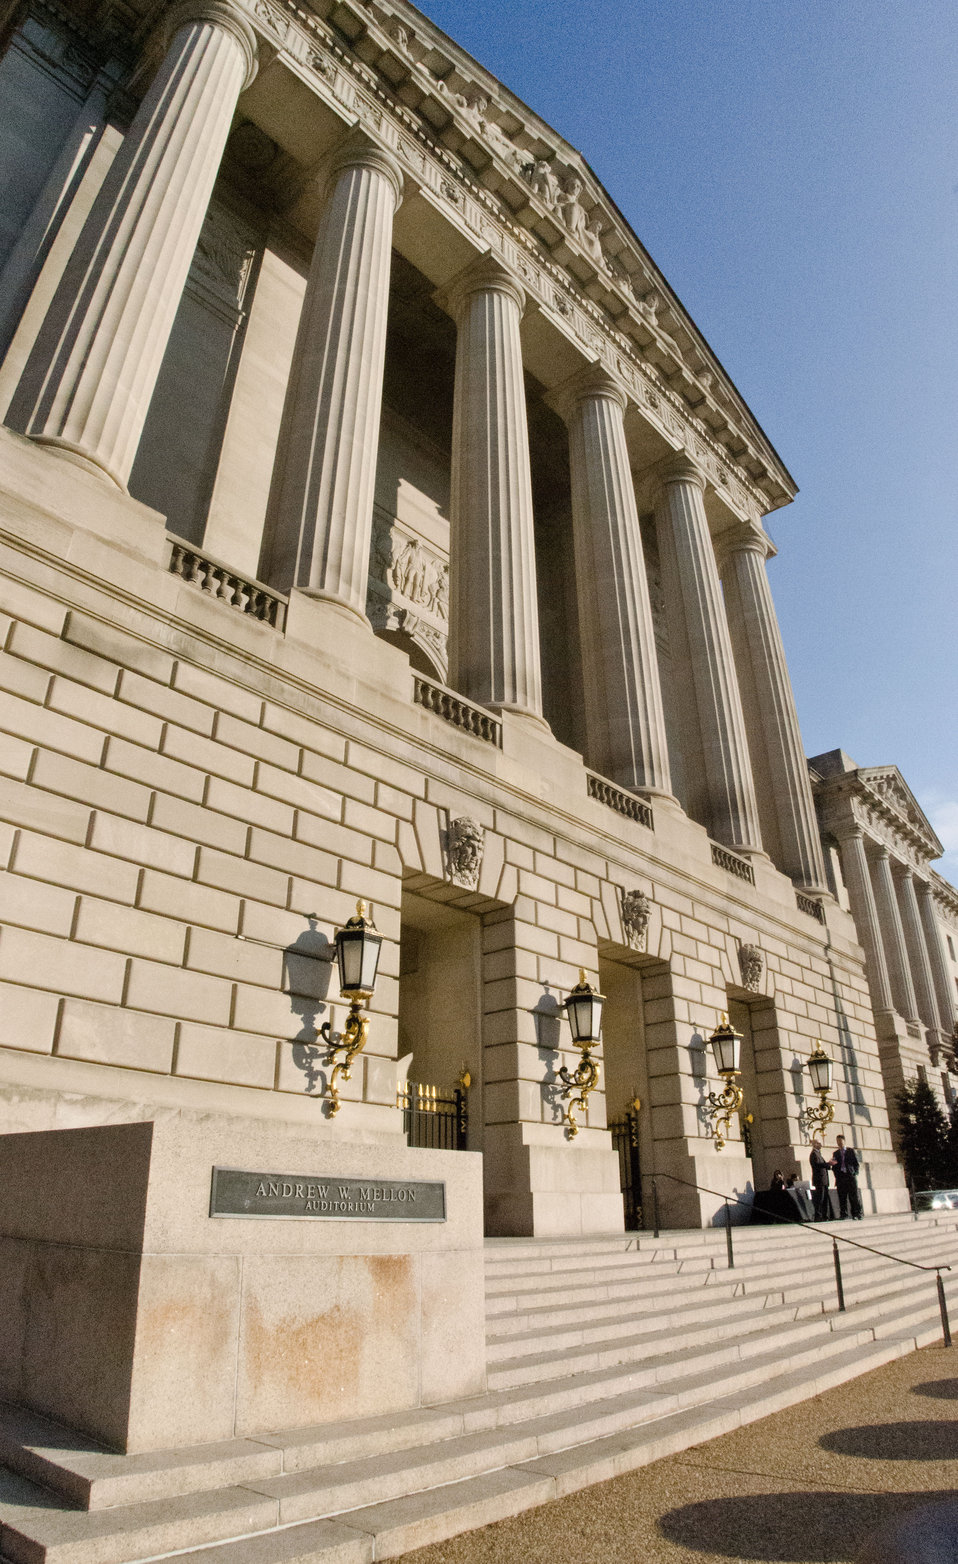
The 23rd Session of the U.S. China Joint Commission on Commerce and Trade (JCCT) meets at the Andrew W. Mellon Auditorium n Washington, D.C. on Wednesday, Dec. 19, 2012. The JCCT holds high-level plenary meetings on an annual basis to review progress made by working groups that focus on a wide variety of trade issues. These working groups meet throughout the year to address topics such as intellectual property rights, agriculture, pharmaceuticals and medical devices, information technology, tourism, commercial law, environment, and statistics. Established in 1983, the JCCT is the main forum for addressing bilateral trade issues and promoting commercial opportunities between the United States and China. The 2011 JCCT meeting was held in Chengdu, China, where China agreed, among other issues, to improve intellectual property enforcement, delink innovation policies to government procurement preferences, and provide a fair and level playing field in China’s Strategic Emerging Industries.